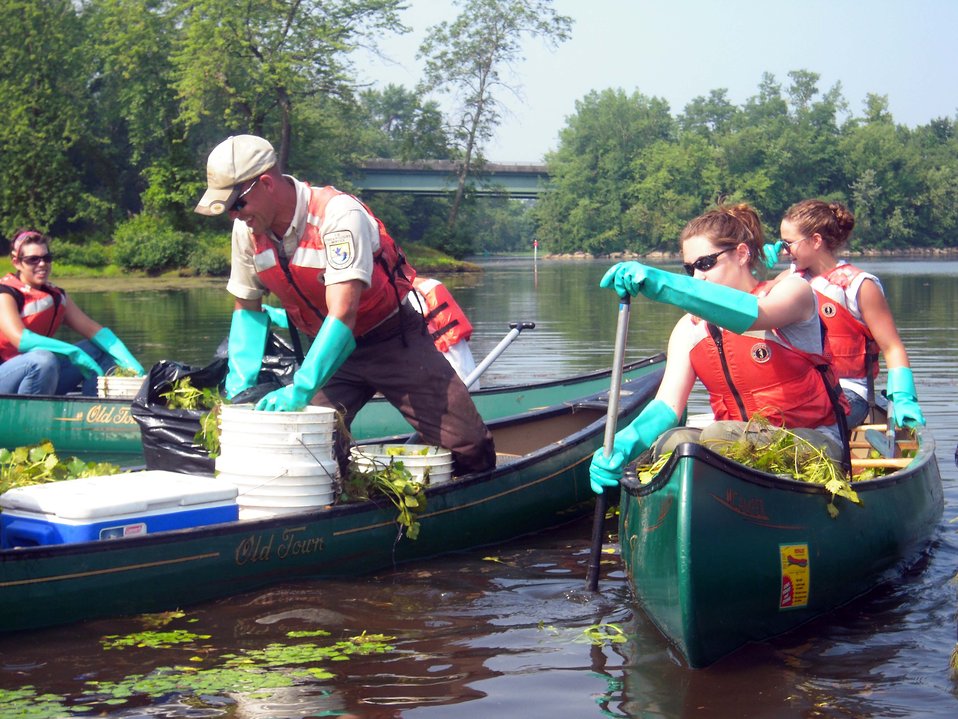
YCC crew removing water chestnut

Filling the boats with water chestnuts.